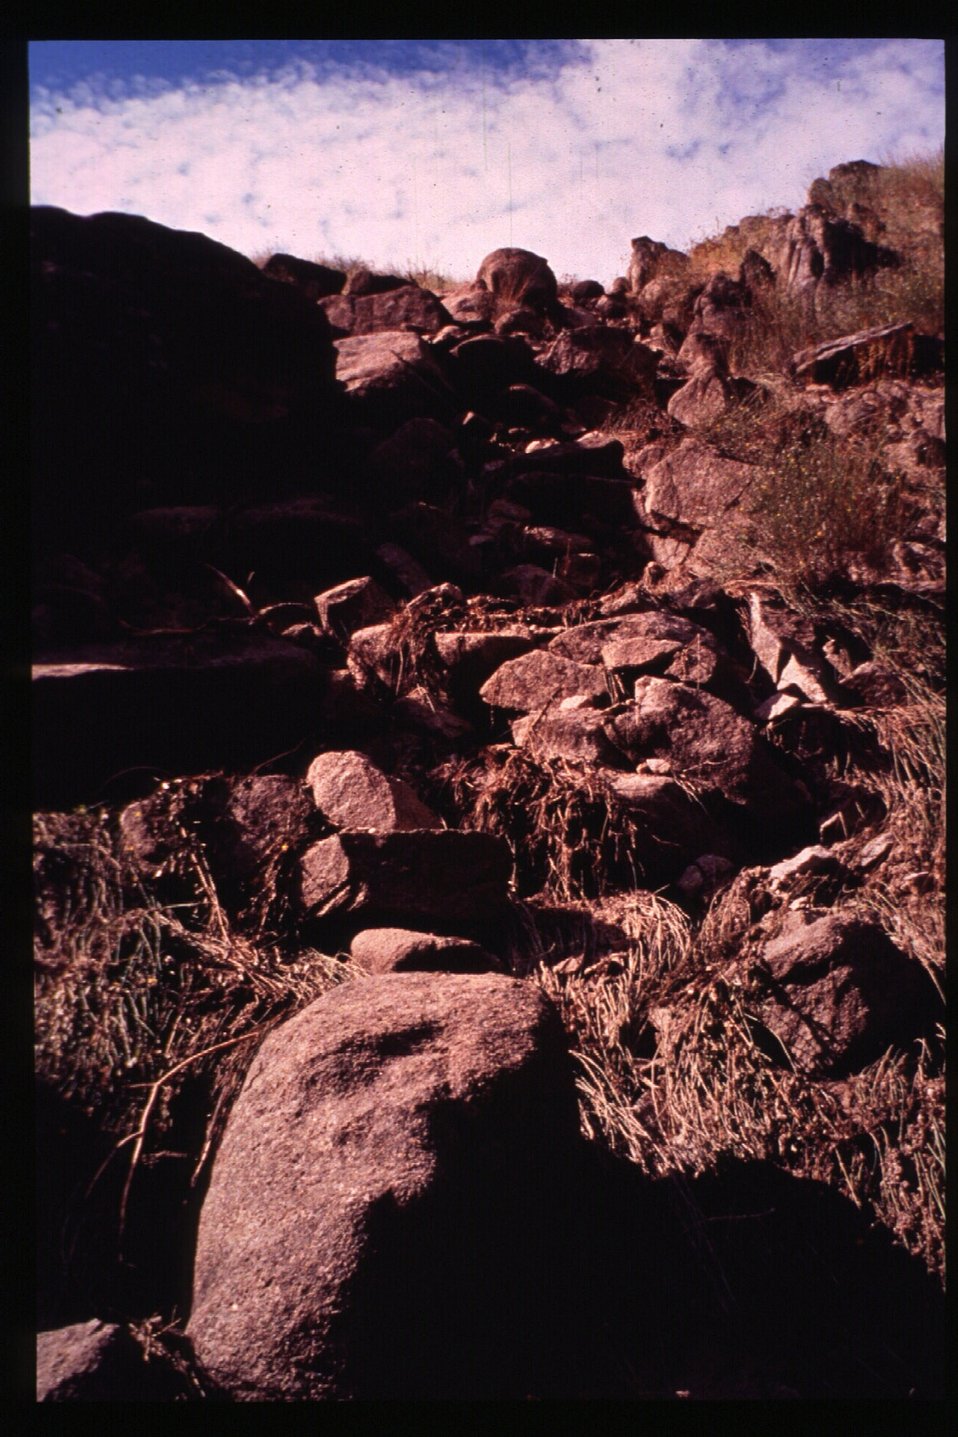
8th Street Fire Four Rivers Field Office LSRD Lower Snake River District